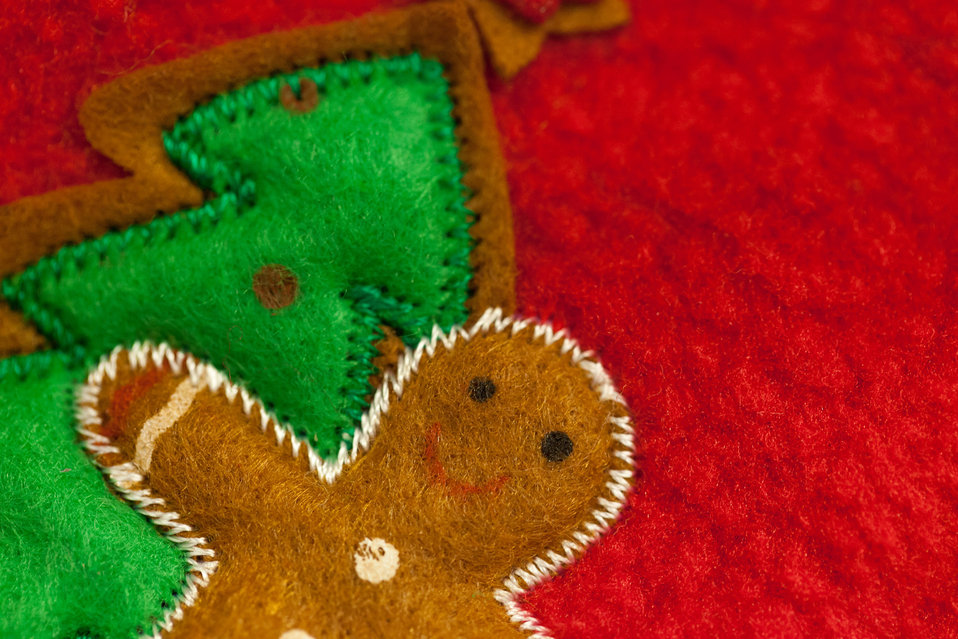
Gingerbread man with a christmas tree on red background.